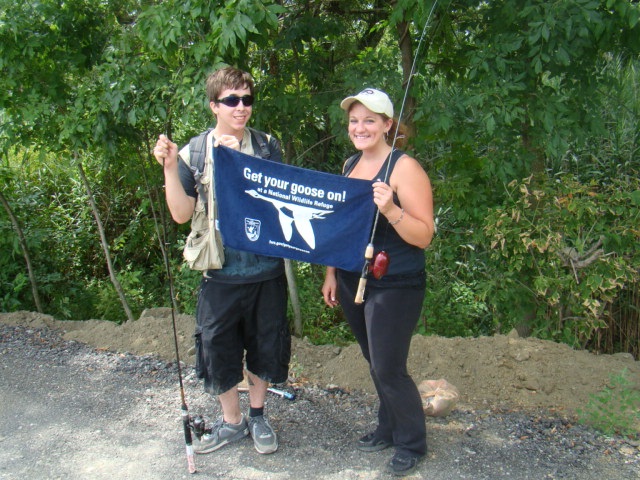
Get Your Goose On!

Fishing! GYGO! John Heinz NWR.